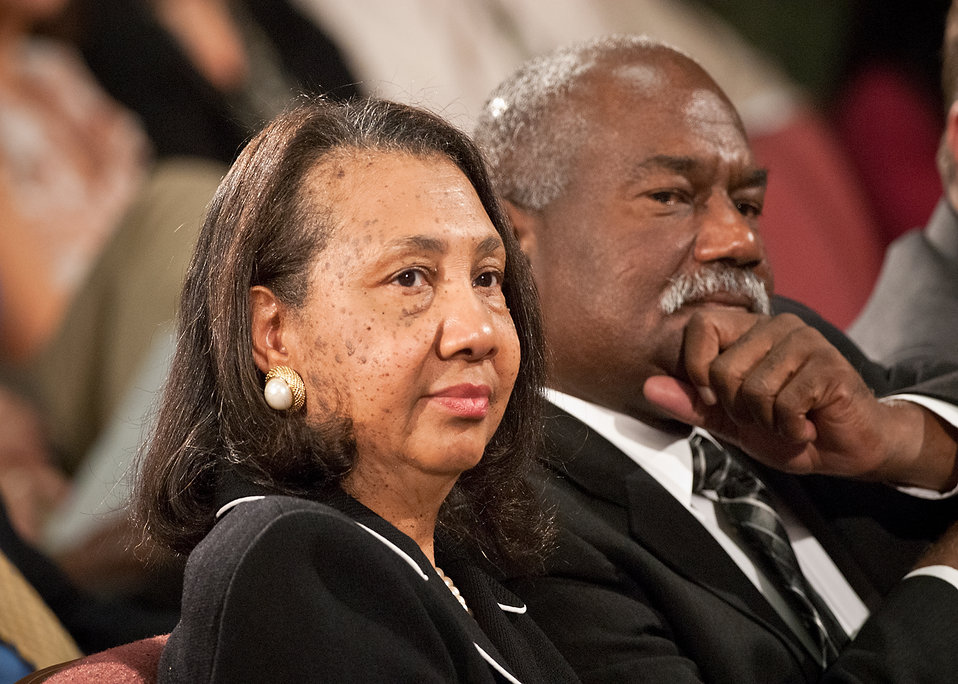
Dr. Alma Hobbs, Associate Assistant Secretary for Administration (left) and Pearlie Reed, Assistant Secretary for Administration (right) listen to panel members representing the seven U.S. Department of Agriculture mission areas during the Cultural Transformation Recognition Ceremony at the Jefferson Auditorium, US Department of Agriculture in Washington, DC, on Tuesday, October 4, 2011. Cultural Transformation is the process of creating a workplace where all employees and customers are treated with dignity, respect and the opportunity for success. Recognizing the important contributions of all employees to the operation of the United States Department of Agriculture. The goal of cultural transformation is to get everyone at USDA – from the Under Secretaries to employees at every grade level, in every location - to ensure USDA is a place where there’s opportunity for all to reach their full potential. Only then can USDA provide its customers with exceptional service in an equitable manner.